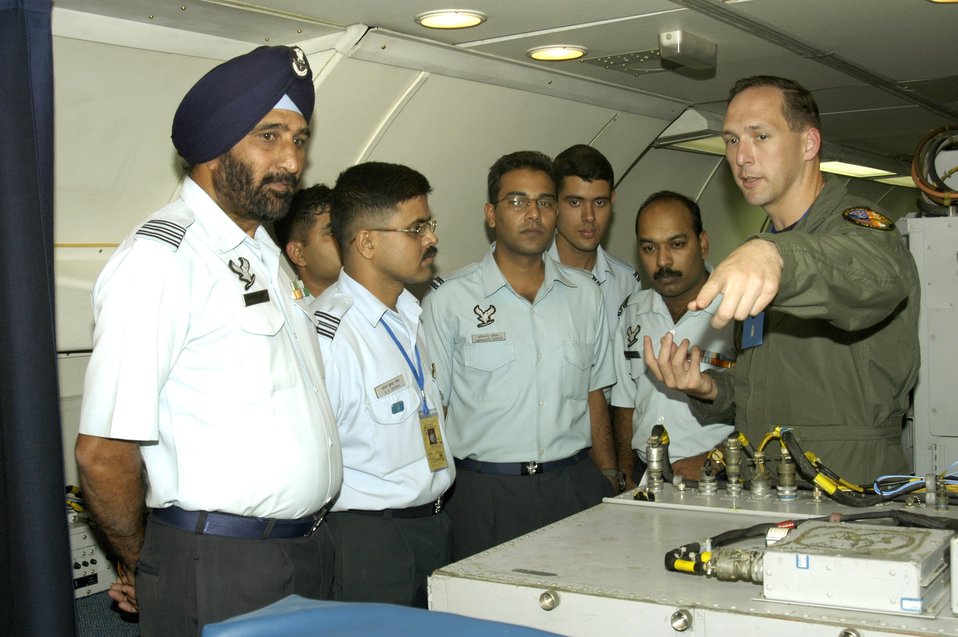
Cope India 06

KALAIKUNDA AIR STATION, India (AFPN) -- Capt. James Munroe explains E-3 Sentry airborne warning and control system aircraft capabilities to Indian Air Force radar officers during exercise Cope India '06 here. Captain Munroe is from the 961st Airborne Air Control Squadron, Kadena Air Base, Japan. The exercise began Nov. 7.